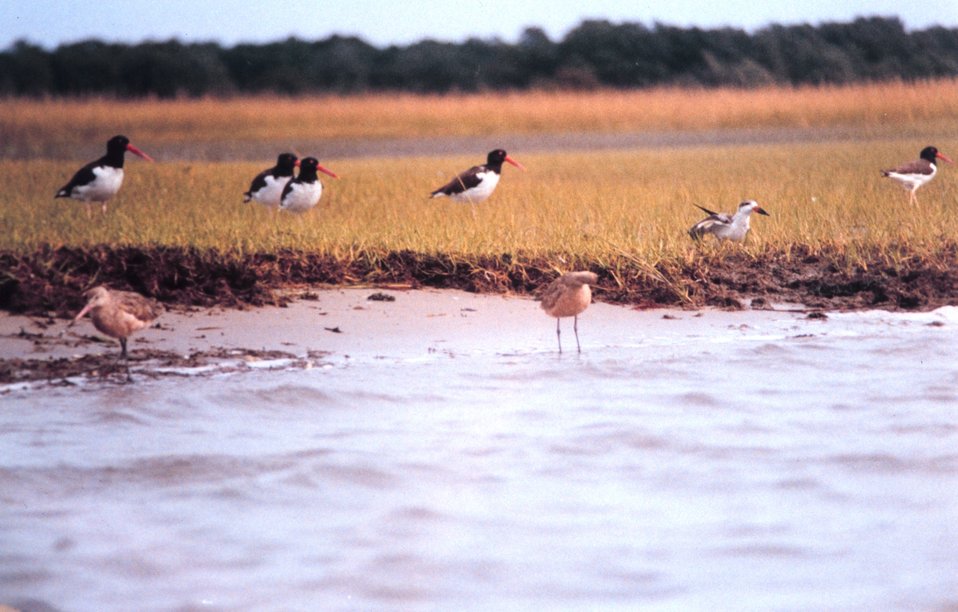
American Oystercatchers are the black and white birds with the reddish-orange beaks.